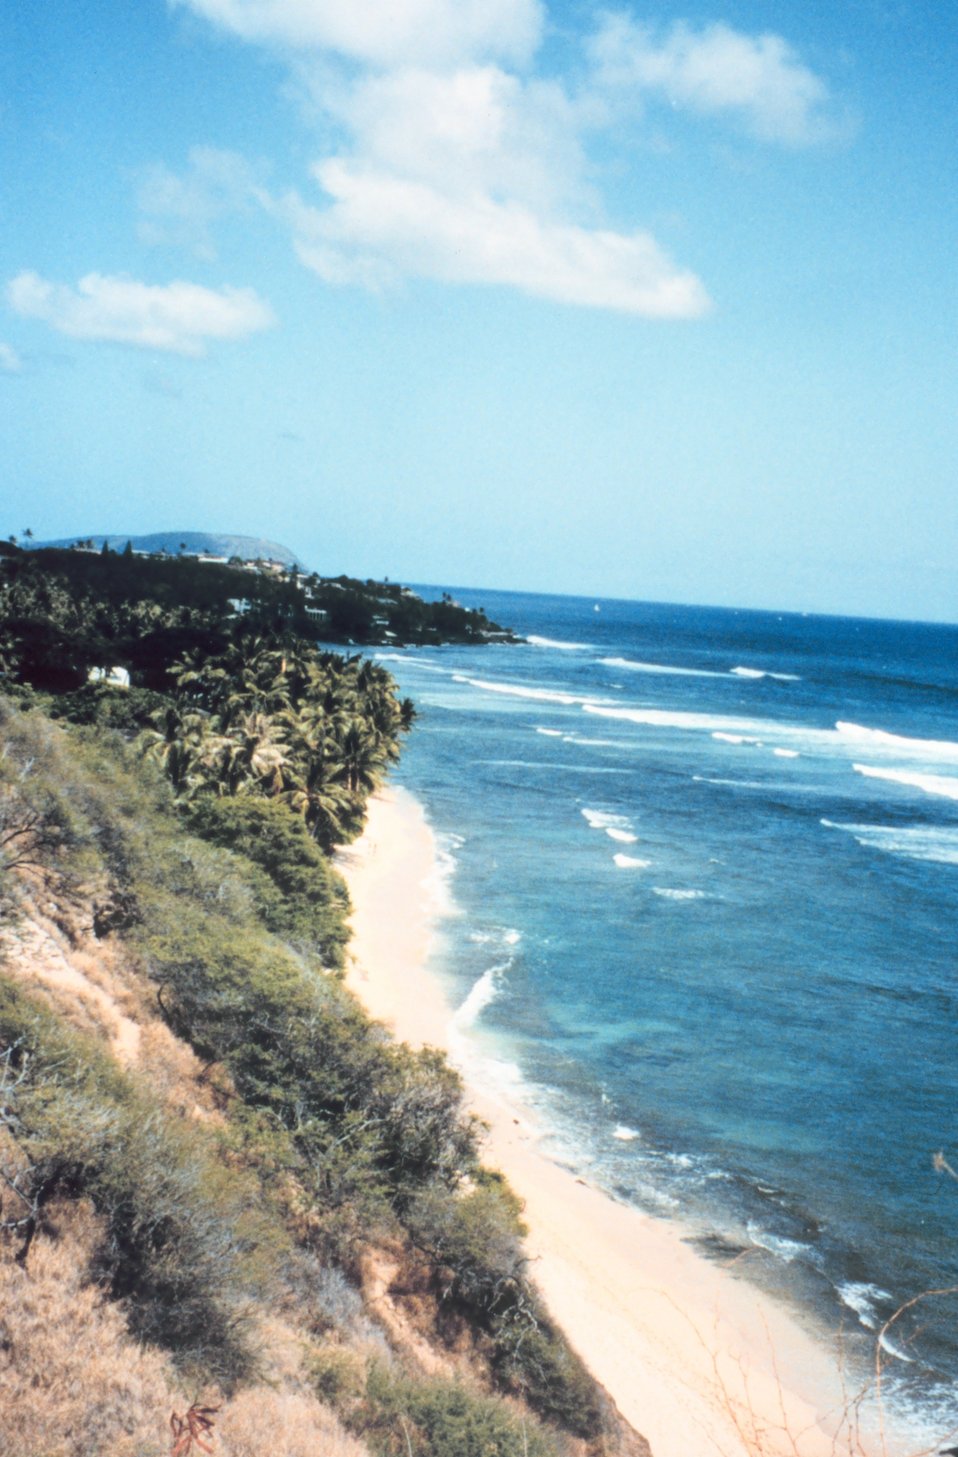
Southeast coast of Oahu